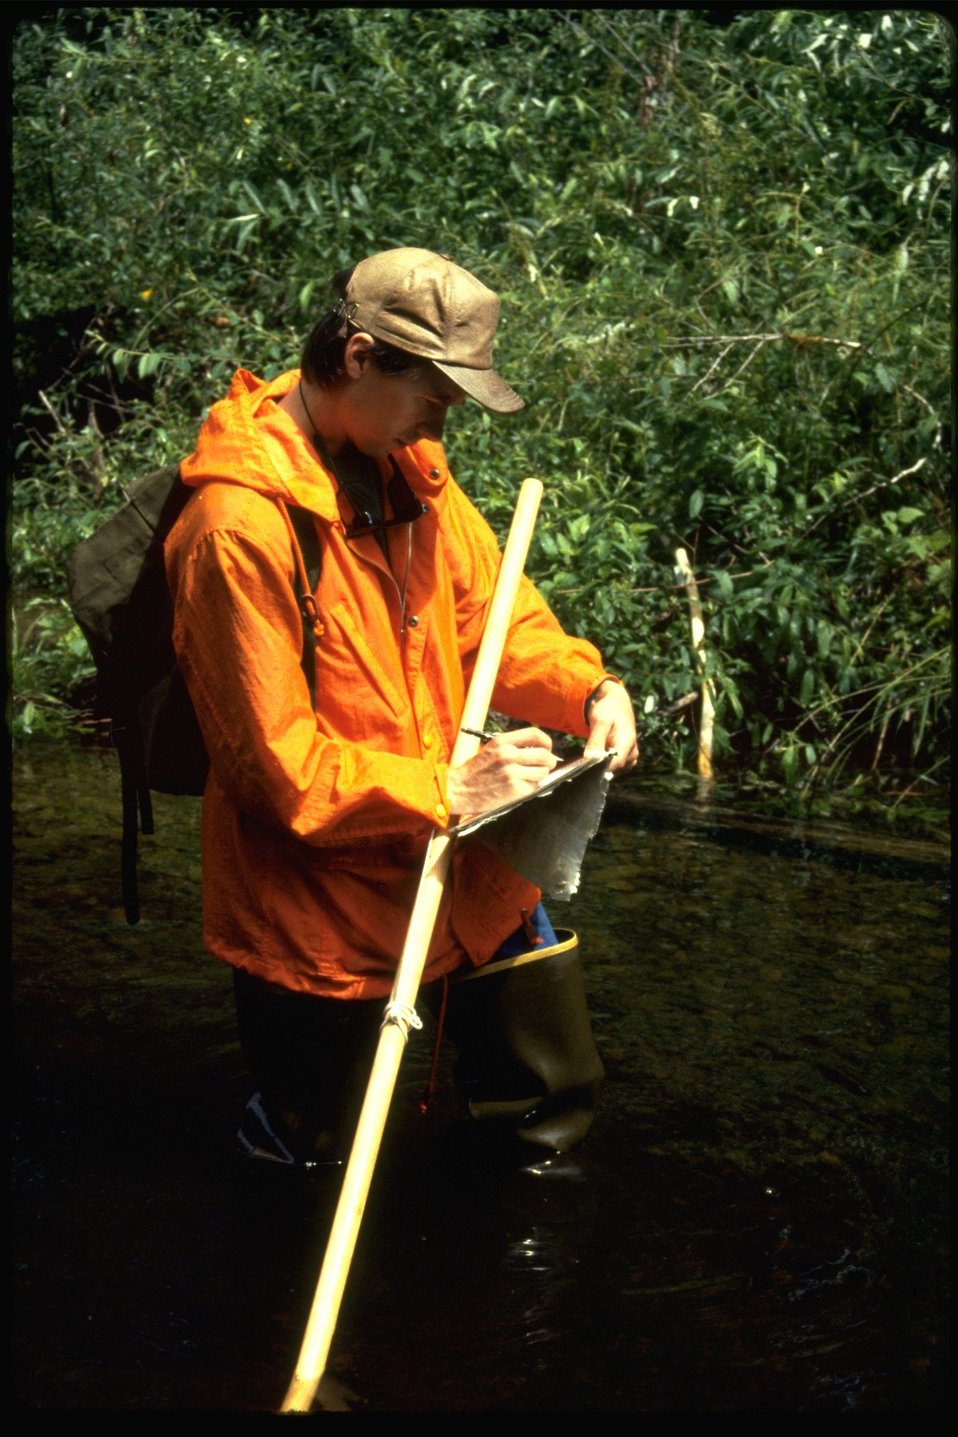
Russ surveying Smith Creek during habitat study.